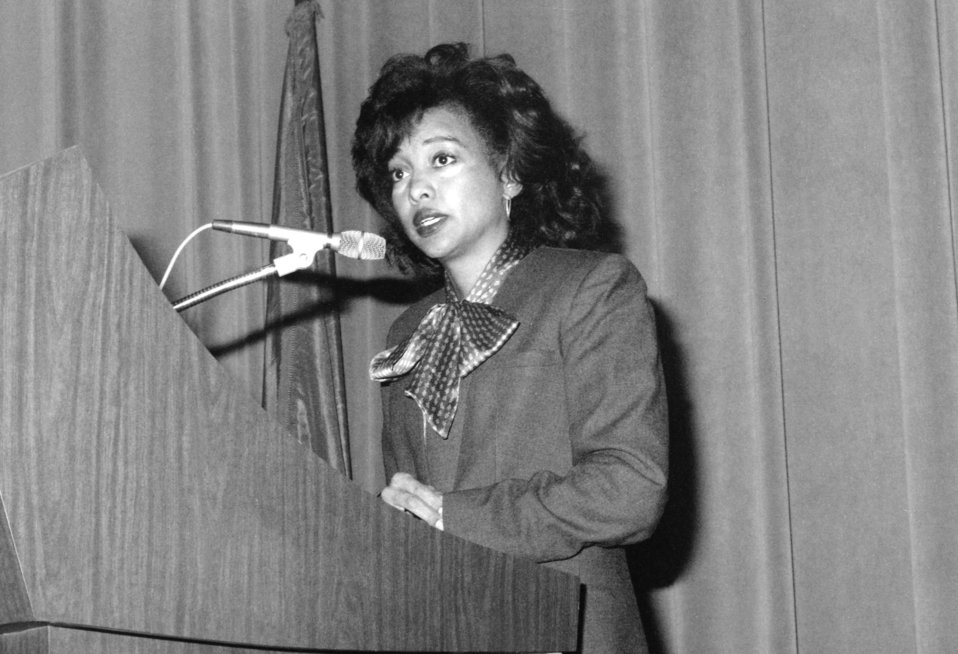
This photograph showed Cynthia Tucker delivering the keynote speech at the Equal Employment Opportunity (EEO) achievement awards at Centers for Disease Control (CDC) in January, 1991.